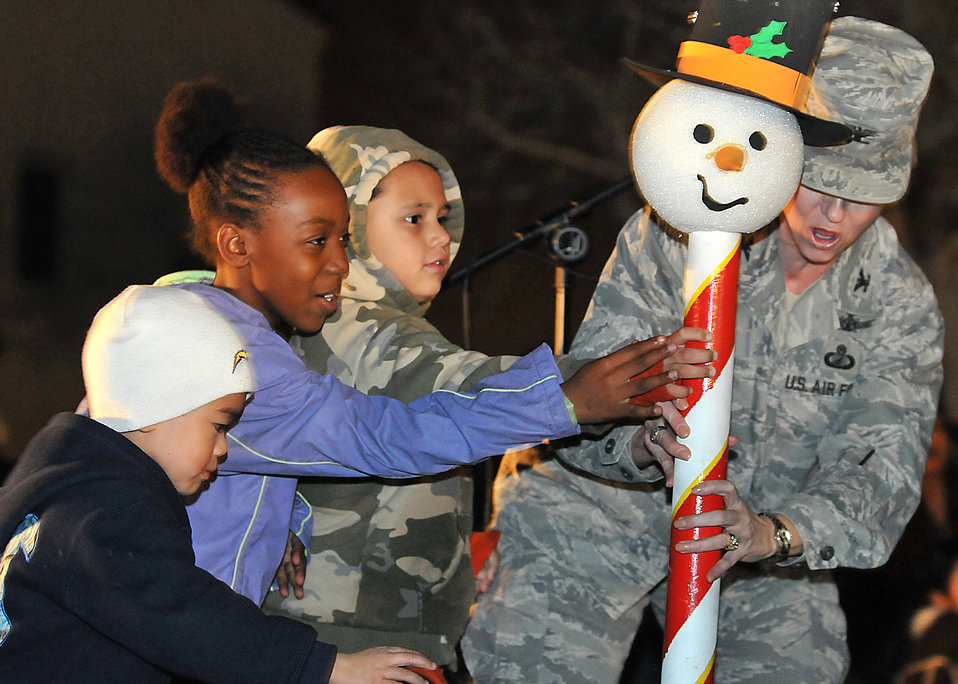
Turn on the lights!

With help from party attendees, Col. Anita Latin, 61st Air Base Wing commander at Los Angeles Air Force Base, pushes a giant switch to turn on the lights during the annual Fort McArthur, Calif., tree lighting ceremony, Dec. 4, 2009. Other festivities included a visit from Santa, snow day with children's play area covered with more than 20 tons of man-made snow, two sled runs and a holiday story reading by Colonel Latin.